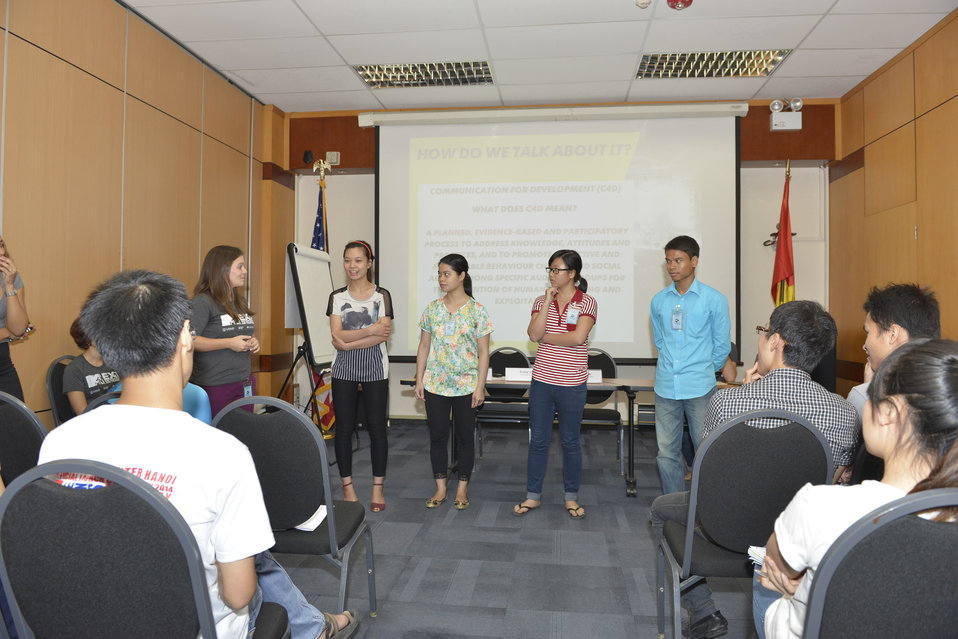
MTV Exit Talk to Engage Students in the Fight against Human Trafficking

Hanoi. June 5, 2014.